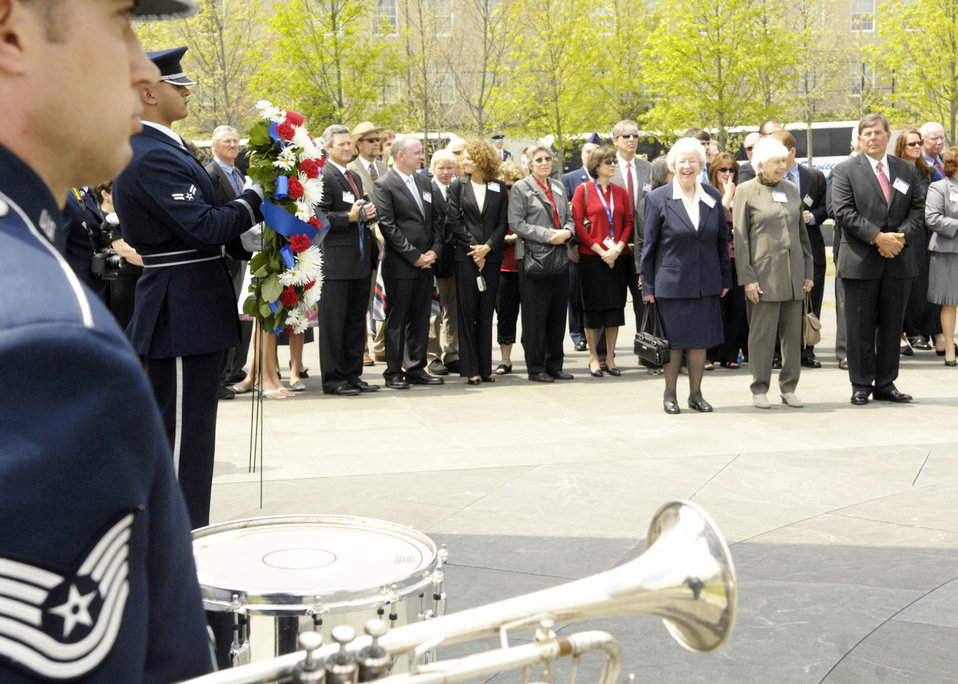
WWII bomber crew awarded Distinguished Flying Cross

World War II's